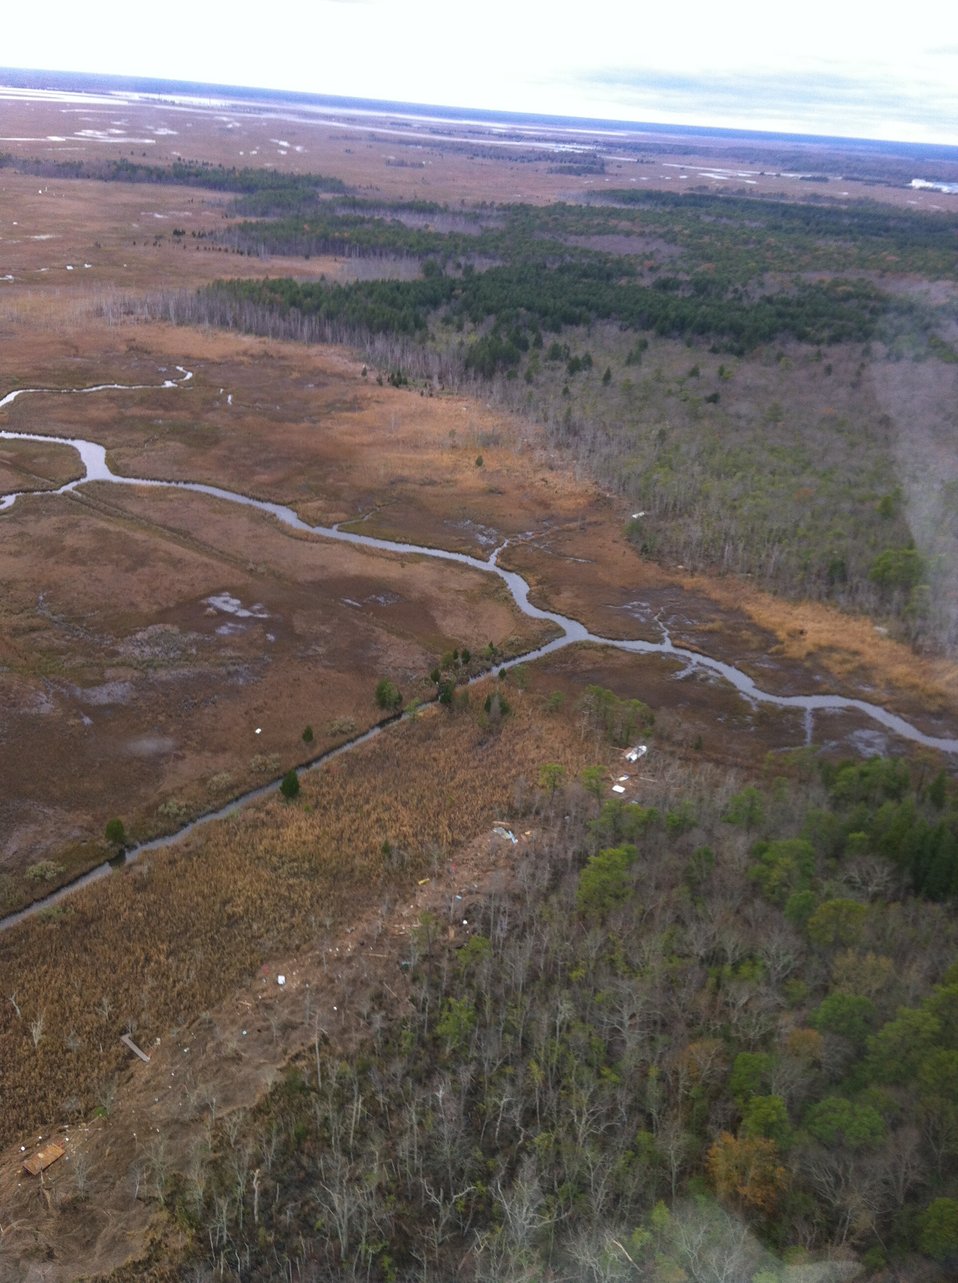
Aerial photo of Edwin B. Forsythe National Wildlife Refuge (NJ)

Rack line with debris and a boat on refuge